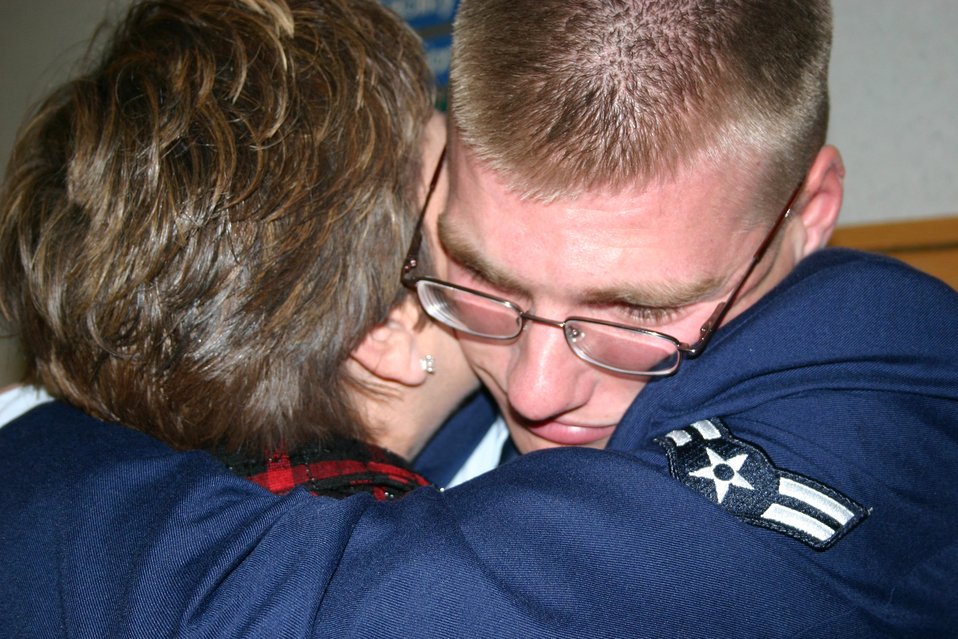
Graduation surprise

0612006-6155S-002
Airman Basic David Parker hugs mom, Cathie Parker, in an emotional surprise reunion following his graduation from the Aeromedical Services Apprentice Phase II Student Course here at Wilford Hall Medical Center Wednesday. Airman Parker did not know his mother and brother would be at his graduation ceremony until he marched into the room and saw them in attendance. The surprise was coordinated by his military training leader and mother.